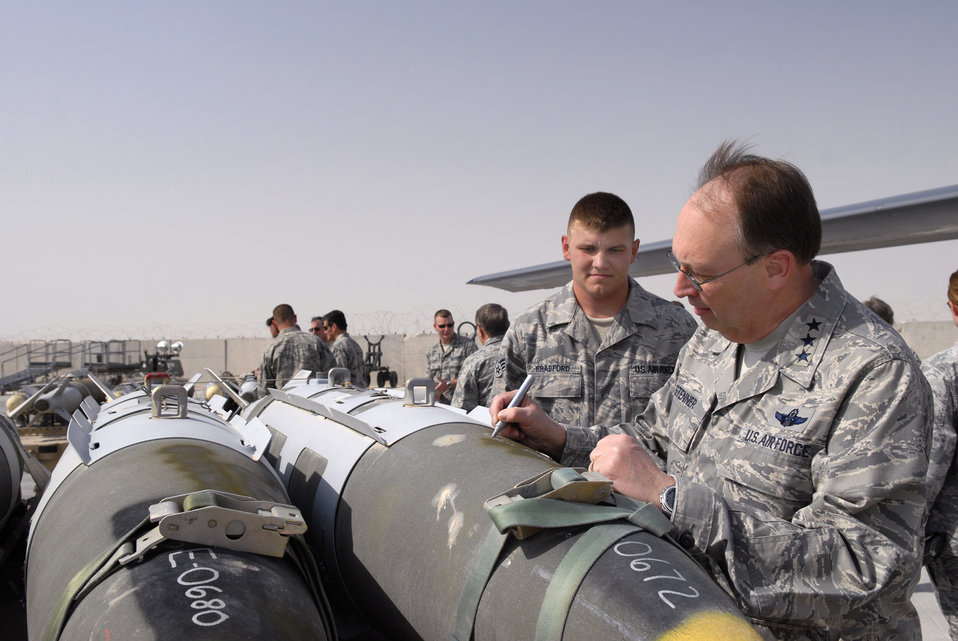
Reserve commander meets with deployed reservists

Lt. Gen. Charles Stenner, commander of Air Force Reserve Command and chief of the Air Force Reserve, writes a message on a 2,000 lb guided bomb unit April 6 before it is loaded onto a B-1B Lancer at an air base in Southwest Asia for delivery to the enemy. General Stenner is being briefed by Senior Airman Timothy Bradford, a maintainer from the 379th Expeditionary Maintenance Squadron. Airman Bradford, from Burleson, Texas, is deployed from Dyess Air Force Base, Texas.